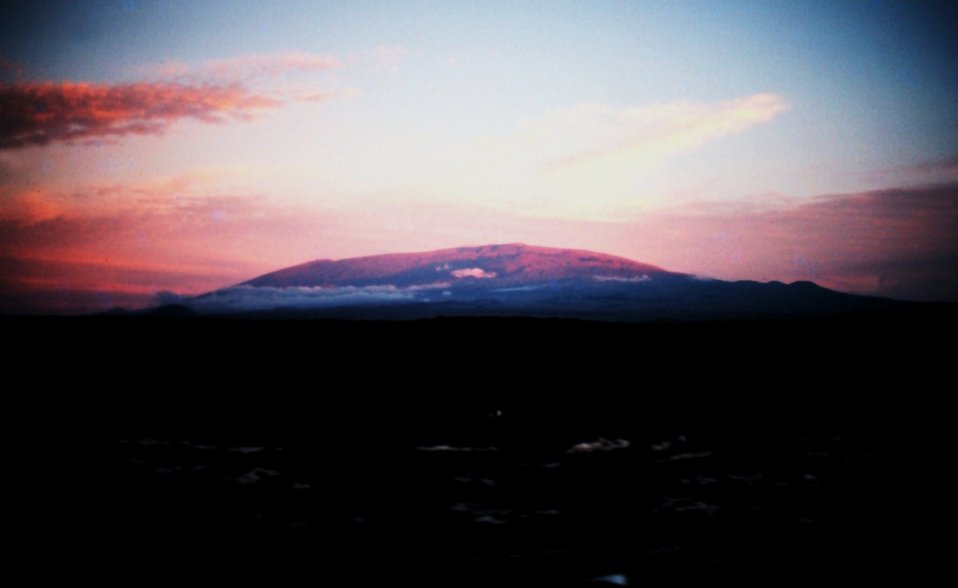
Mauna Loa at sunset